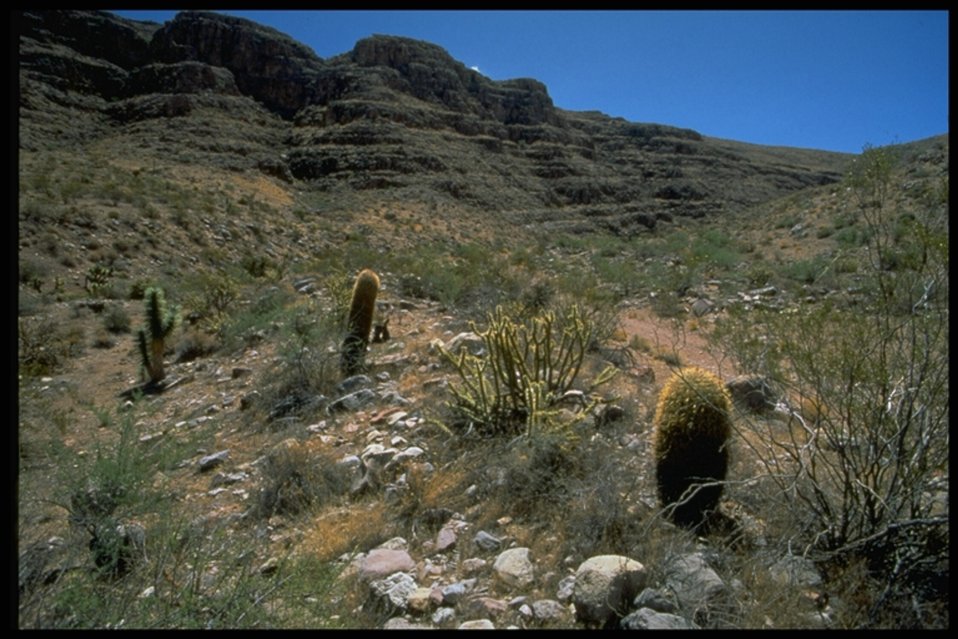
Cacti and other desert plants growing alongside a road in the Grand Canyon-Parshant National Monument.